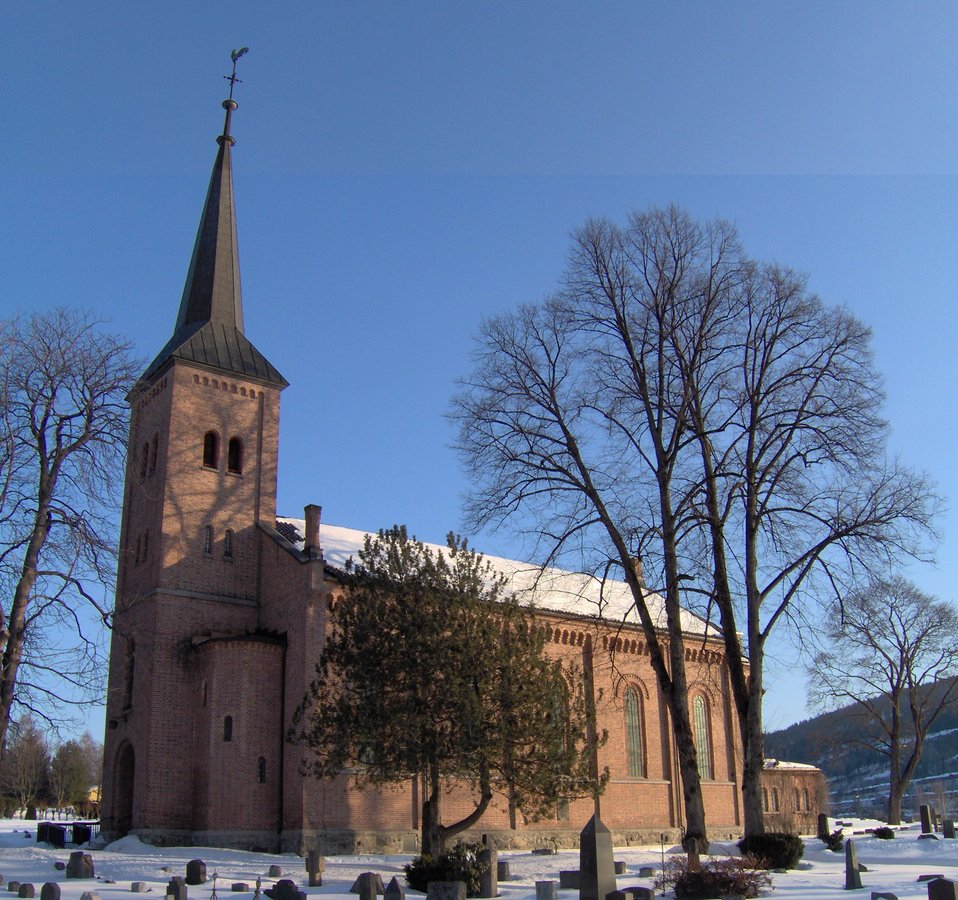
Bryn church in Bærum, Norway